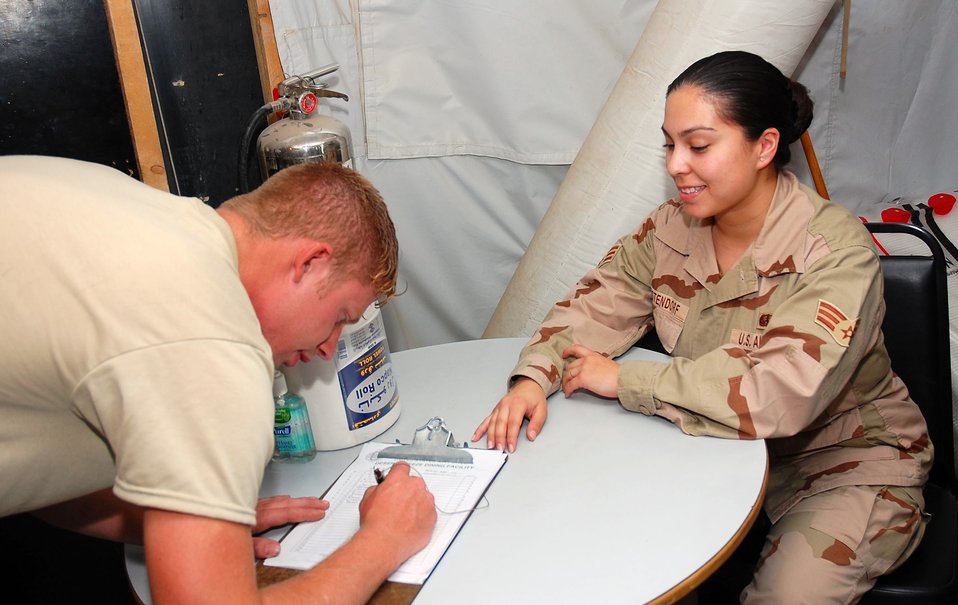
Deployed desert dining is delightful at the DFAC

Senior Airman Katrina Westendorf, 386th Expeditionary Services Squadron food services specialist, ensures proper accountability of servicemembers utilizing facility Nov. 2 here. Airman Westendorf is deployed from Whiteman Air Force Base, Mo.